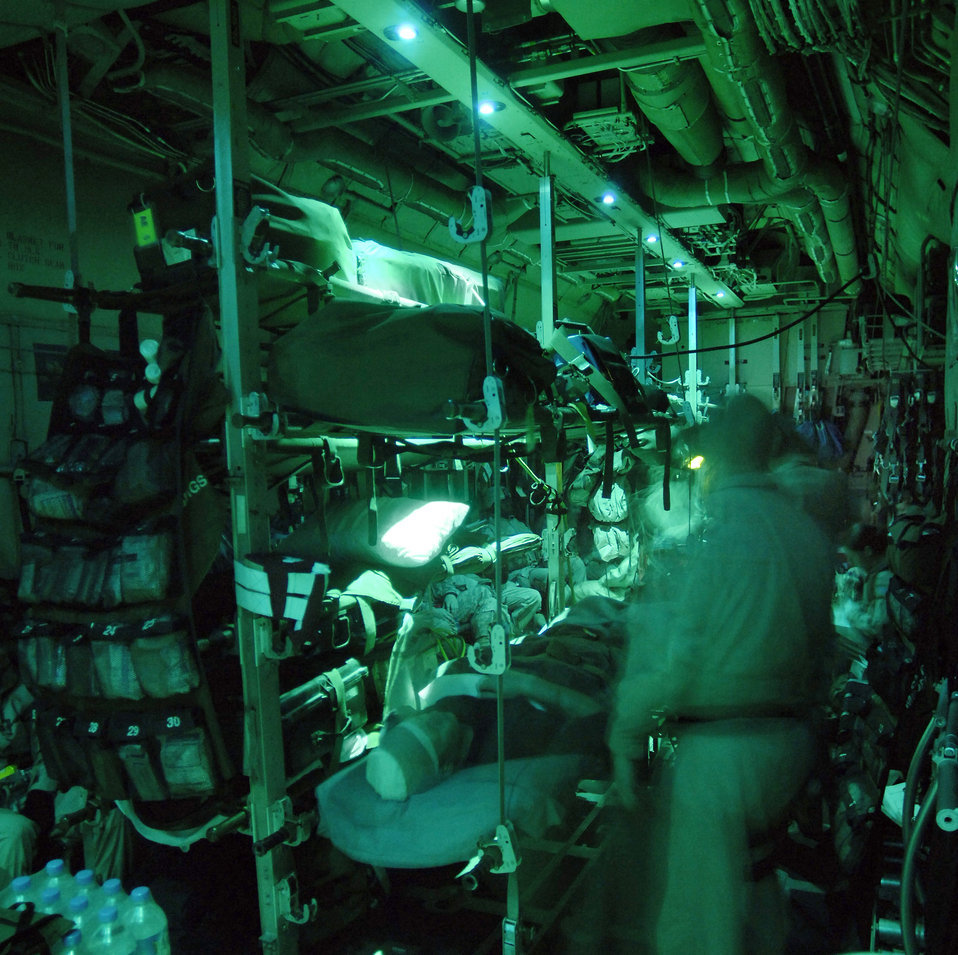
Critical care

BALAD AIR BASE, Iraq (AFPN) -- Capt. Randy Snoots installs a back support for a soldier from the 101st Airborne Division during a flight out of Iraq. Captain Snoots is with the 379th Expeditionary Air Evacuation Squadron and part of a five-person, critical care air transport team, or CCAT. The teams sets up litter racks and patient care kits along with specialized medical support equipment to ensure patients have safe and comfortable flights. The two were flying aboard a C-130 Hercules from the 746th Expeditionary Airlift Squadron.